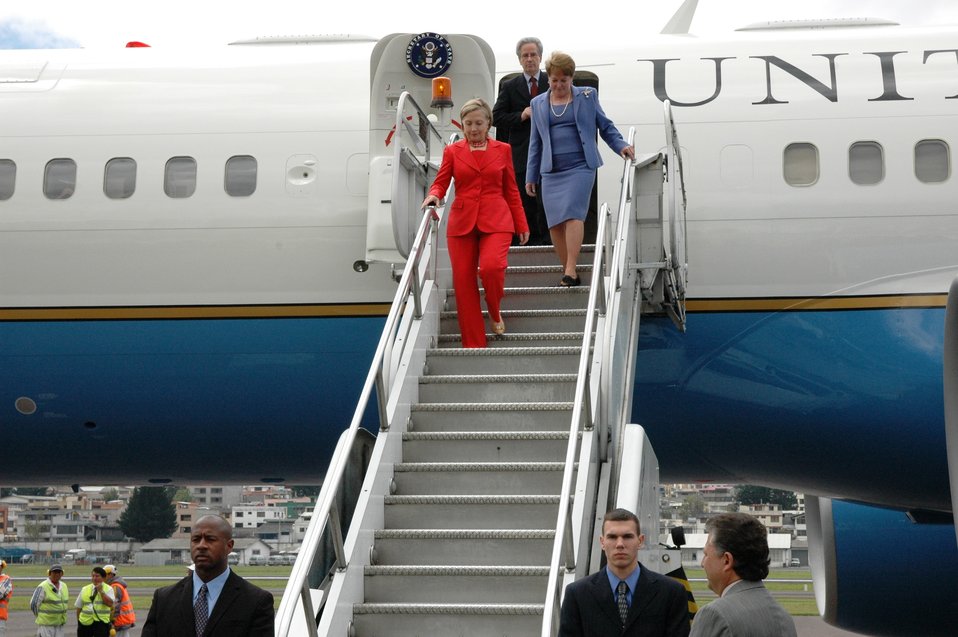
Secretary Clinton Arrives in Quito, Ecuador

U.S. Secretary of State Hillary Rodham Clinton arrives in Quito, Ecuador, on June 8, 2010.